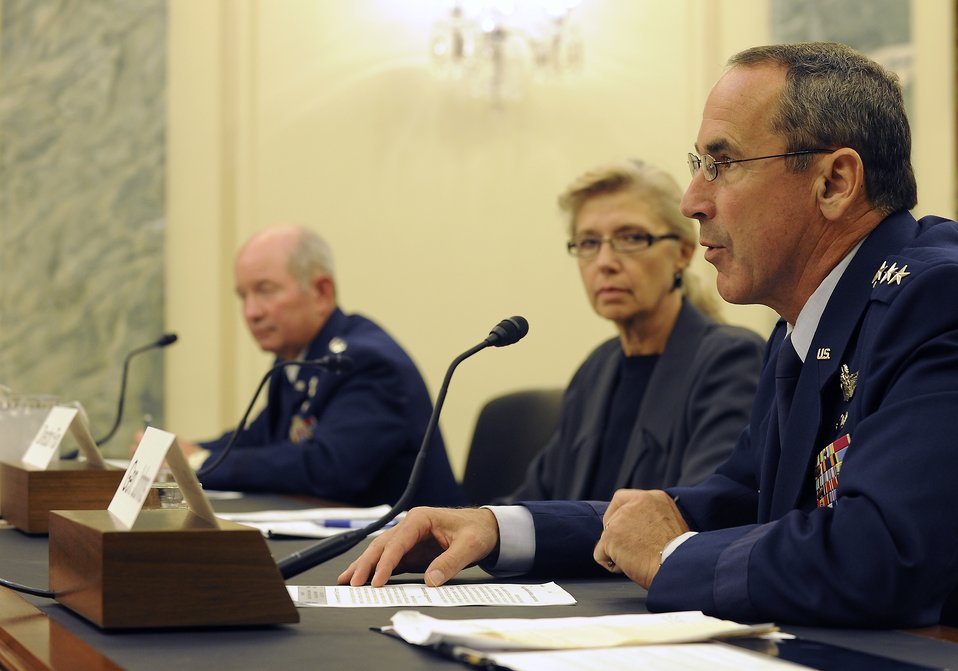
Air Force looks to reduce strategic airlift inventory

Gen. Raymond Johns, the Air Mobility Command commander, reads his opening statement July 13, 2011, during a Senate Armed Services Subcommittee on Seapower hearing on Capitol Hill in Washington, D.C. Christine Fox, the Department of Defense Cost Assessment and Program Evaluation director, and Gen. Duncan McNabb, the U.S. Transportation Command commander, also testified before the subcommittee.